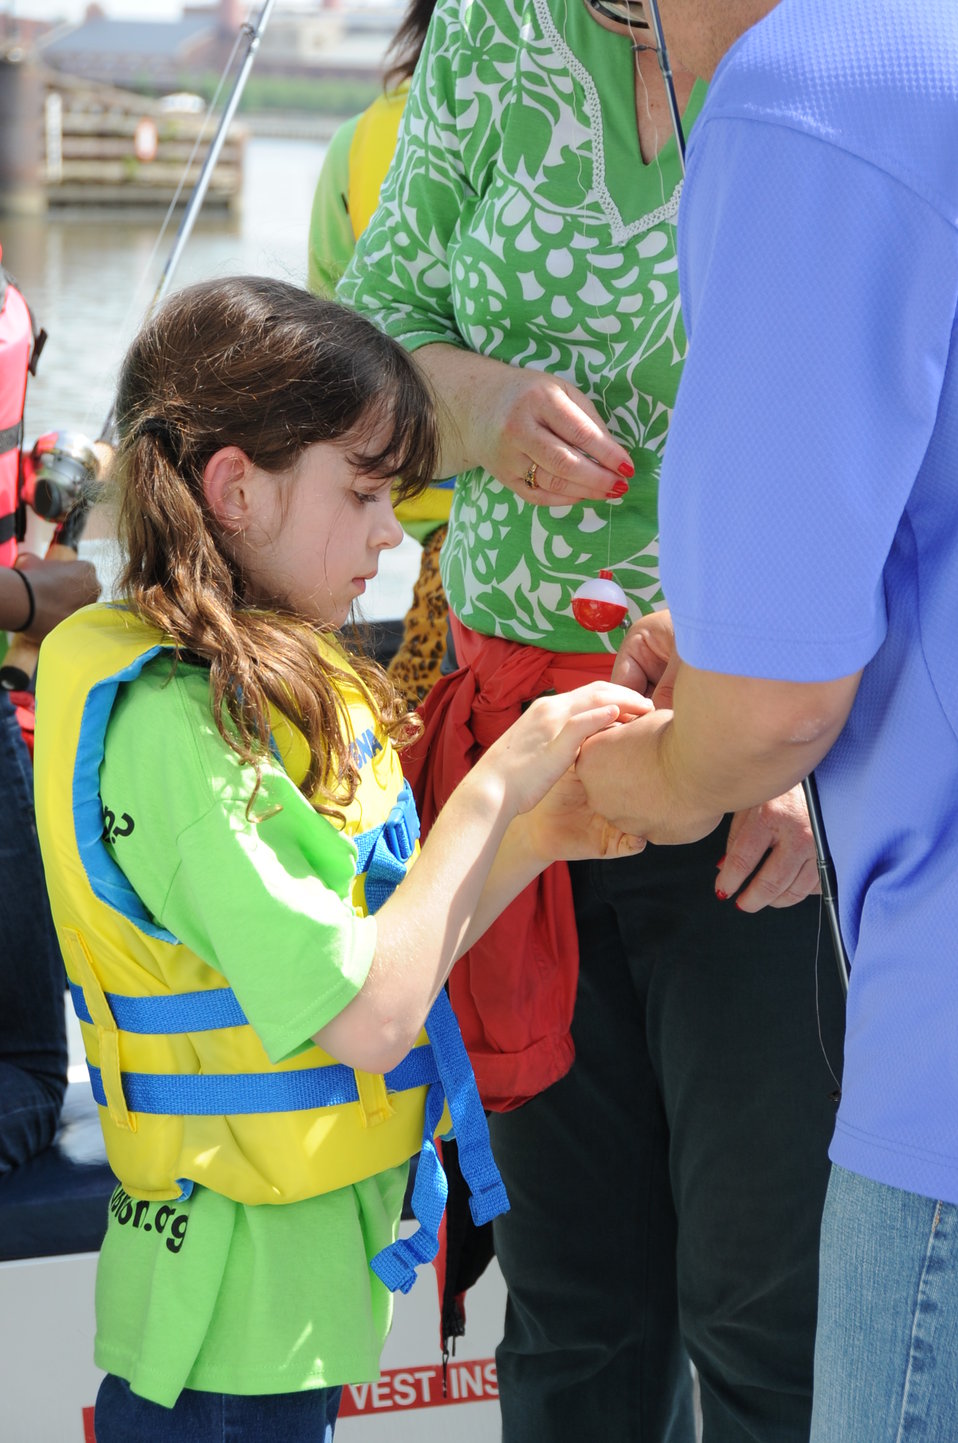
2013 National Fishing and Boating Week

Local students prepare to enjoy fishing at the annual kick-off of National Fishing and Boating Week on the Anacostia River in Washington D.C.